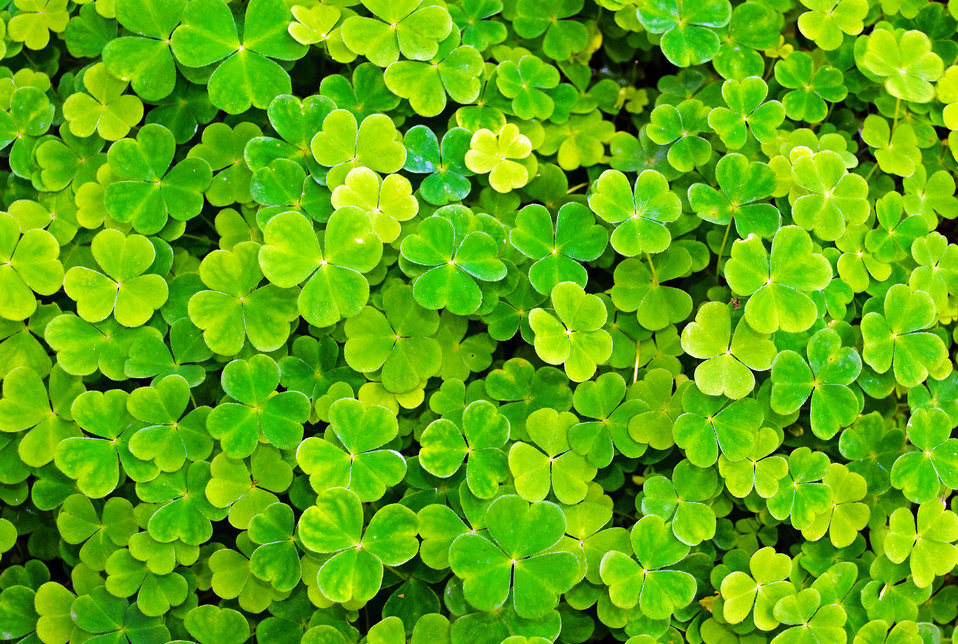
Plant -background.